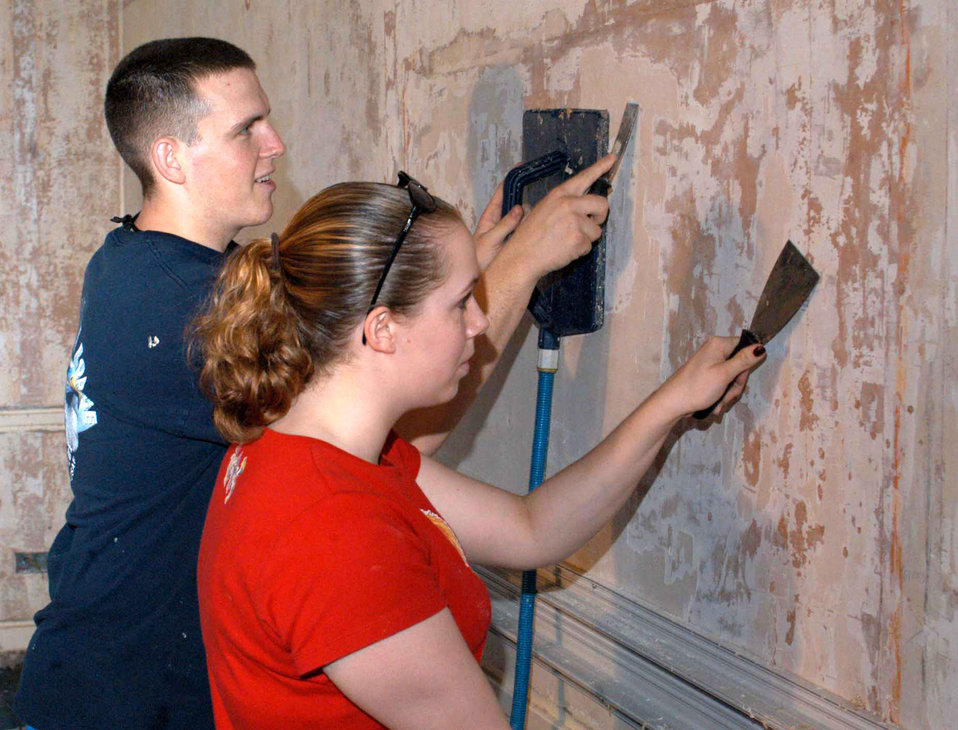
New Airmen's club

ROYAL AIR FORCE LAKENHEATH, England -- Airman 1st Class Kyle Scritchfield and Airman 1st Class Sara Pradke scrape off wallpaper at the old community center here to prepare for the future home of an Airmen's club. Airman Scritchfield is assigned to the 48th Civil Engineer Squadron, and Airman Pradke is assigned to the 48th Security Forces Squadron.